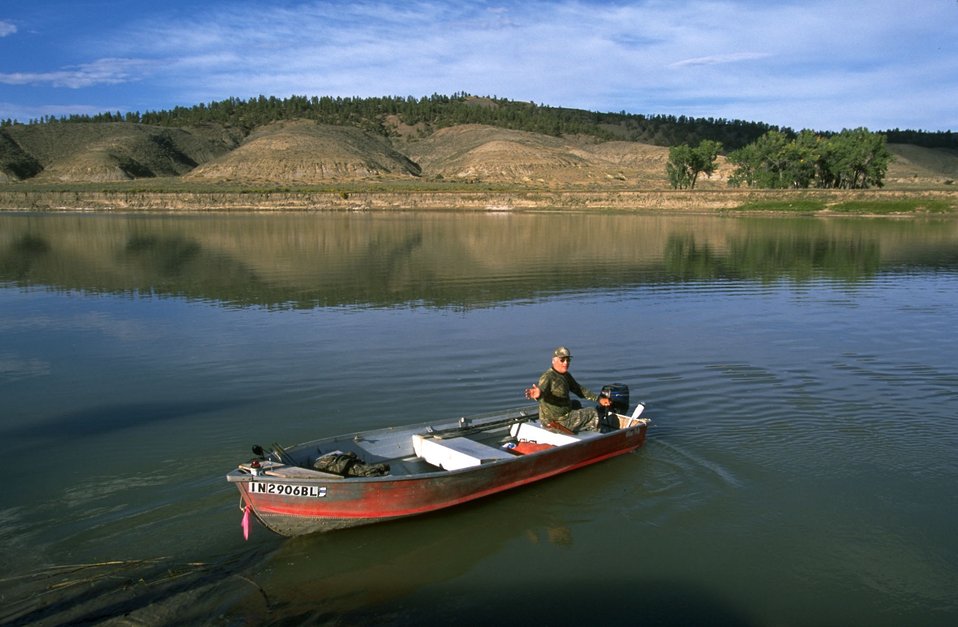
Motorboat at Kipp Recreation Area